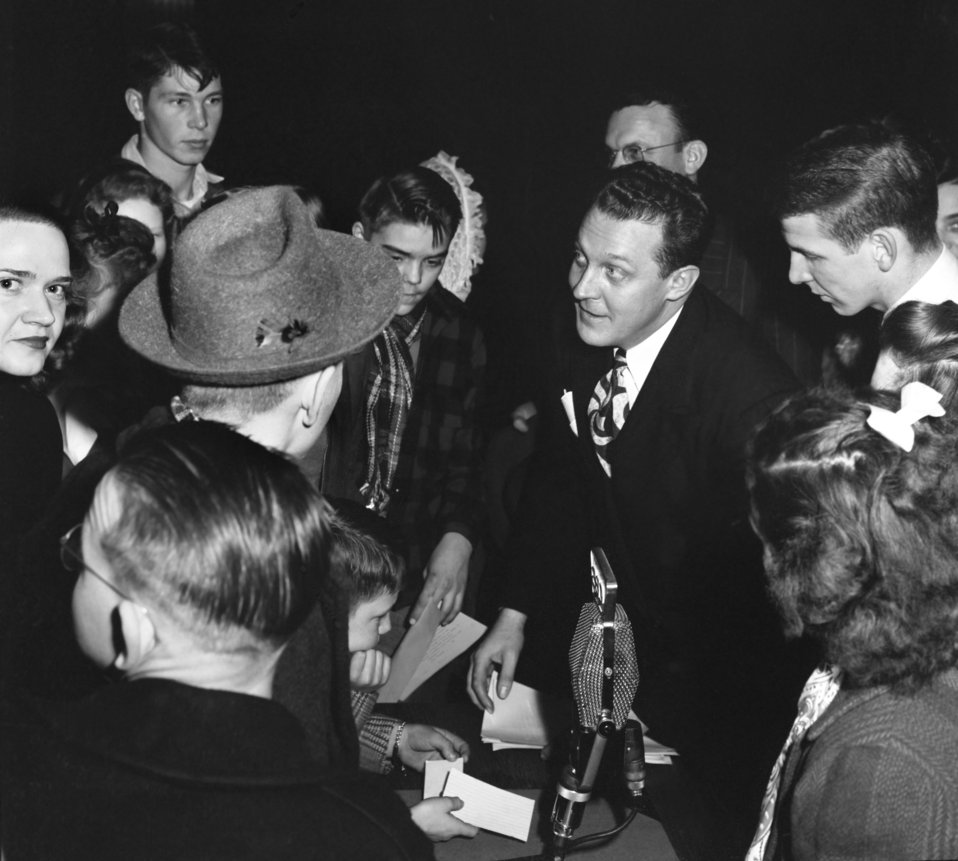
Radio Broadcast 'We the People' Oak Ridge 1947

3287-5c DOE photo Ed Westcott 2-9-1947 Oak Ridge Tennessee